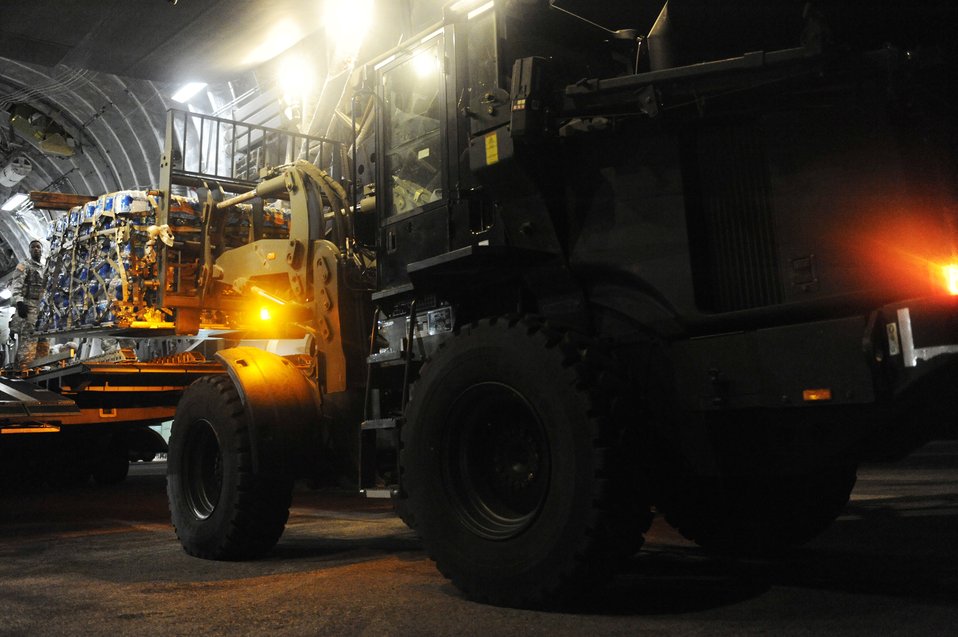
Returning

A pallet of water is off loaded from a C-17 Globemaster III Jan. 20, 2010, at Toussaint L'Ouverture International Airport in Port-au-Prince, Haiti. Airmen from Air Mobility Command are delivering humanitarian aid in response to the earthquake that leveled much of the country's infrastructure Jan. 12.